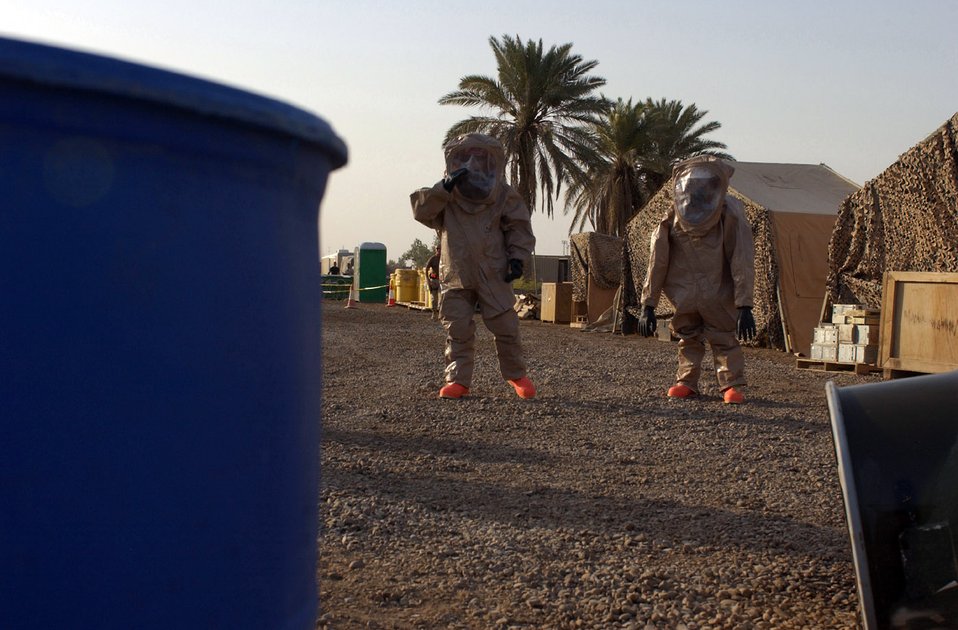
Deployed firefighters modern day dragon slayers

BAGHDAD, Iraq -- Staff Sgt. Spencer Proctor (left) and Airman 1st Class Matthew Metzger approach simulated hazardous materials to determine the type and nature of the threat. They are assigned to the 447th Expeditionary Civil Engineer Squadron here. Sergeant Proctor is deployed from Luke Air Force Base, Ariz., and Airman Metzger is deployed from Kadena Air Base, Japan.